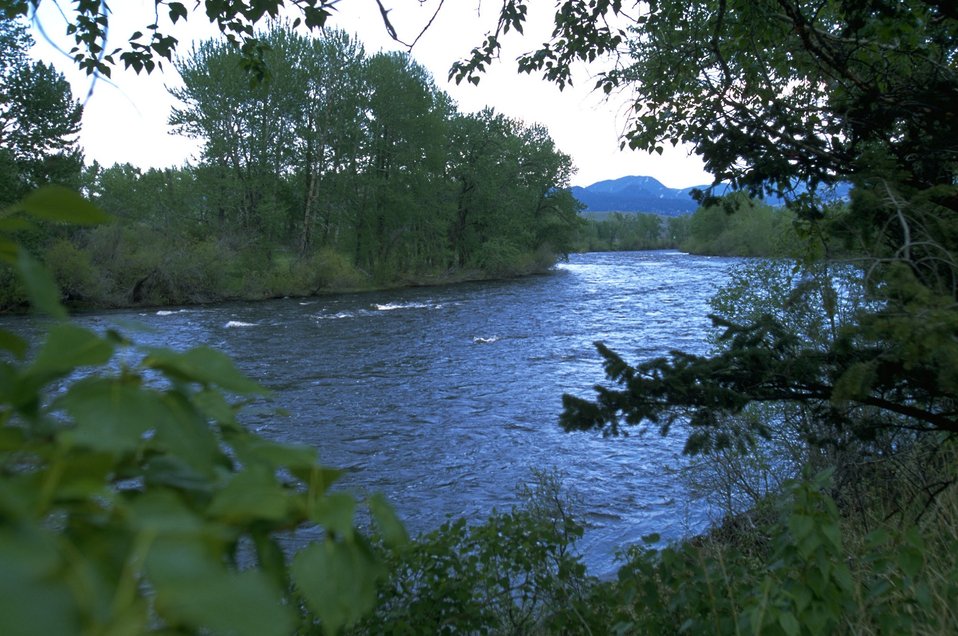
Big Hole River framed in greenery